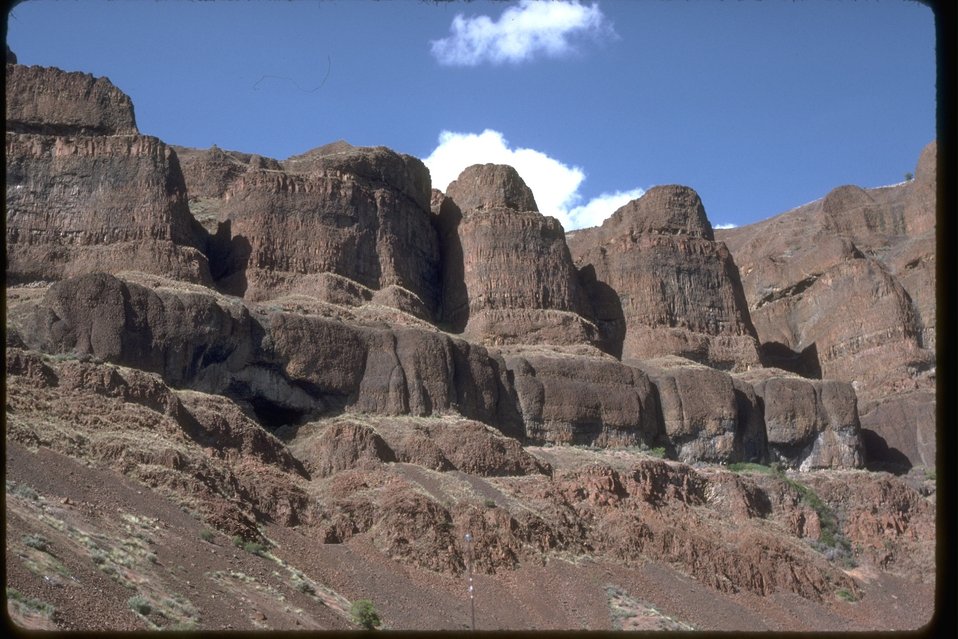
Basalt River Bluffs along the Lower John Day River.